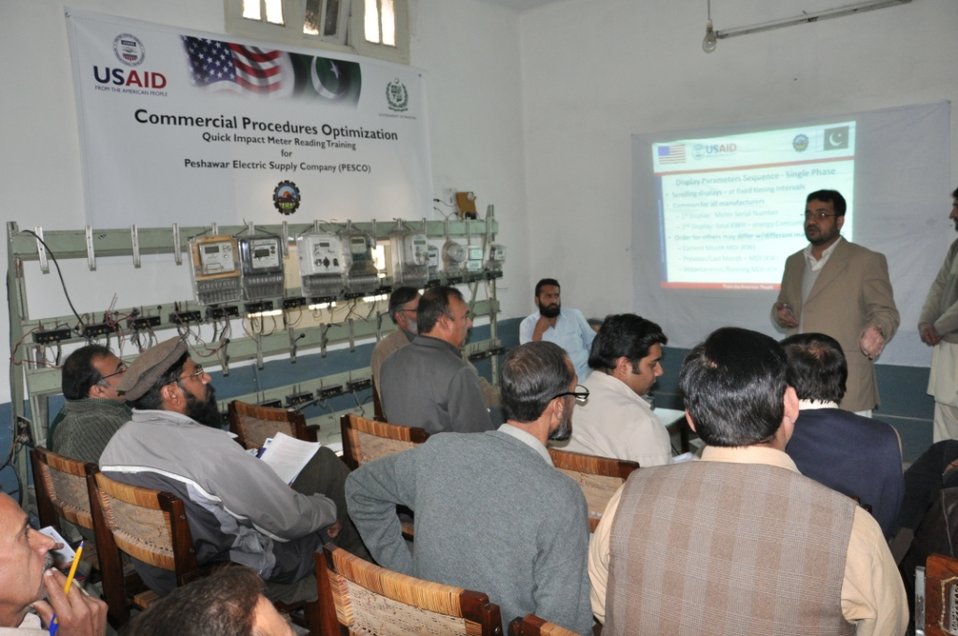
Meter Reading Training

Peshawar, February 27, 2012 - The USAID organized 'Quick Impact Meter Reading Training' at PESCO.